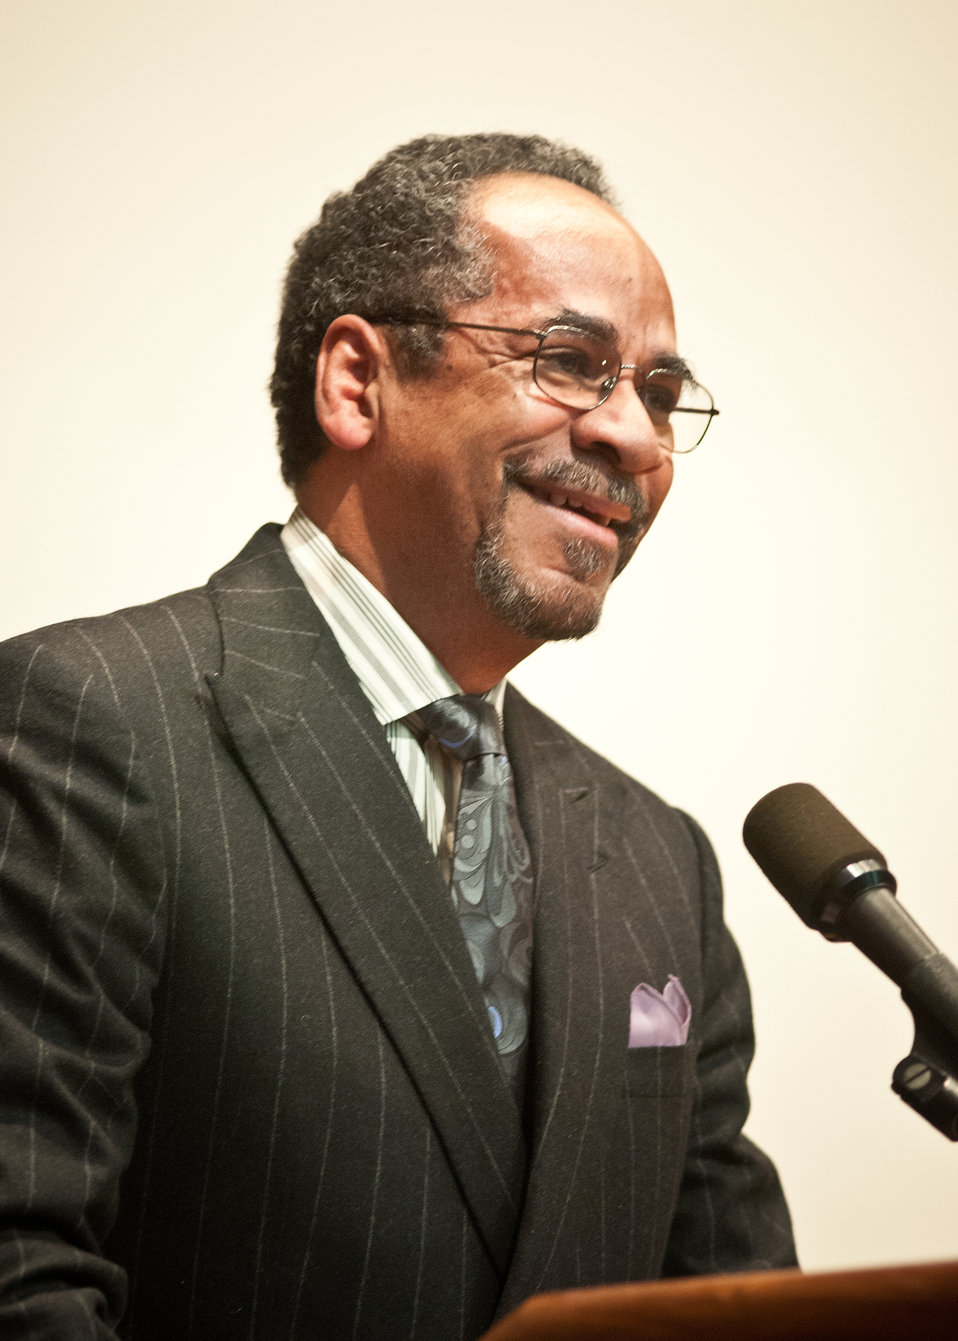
Tim Reid Actor, Comedian, Filmmaker and Social Activist was the guest speaker at the United States Department of Agriculture Black History Month celebration “Black Women in American Culture and History” in Washington, D.C. on Thursday, February 16, 2012. Reid spoke of the importance of women in his family, life and of the contributions of Black women to American history. Reid produced a documentary for USDA Cultural Transformation.